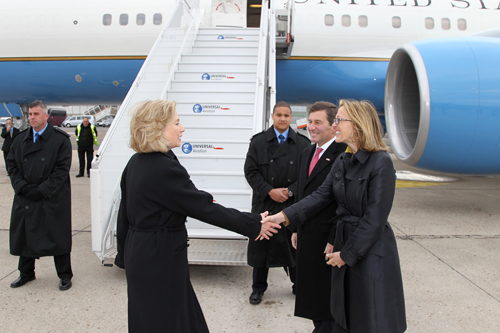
Secretary Clinton Bids Farewell to Ambassador Rivkin and His Wife, Mrs. Tolson

U.S. Secretary of State Hillary Rodham Clinton bids farewell to U.S. Ambassador to France, Charles H. Rivkin, and his wife, Mrs. Tolson, at Le Bourget Airport in Paris, France, on March 15, 2011.